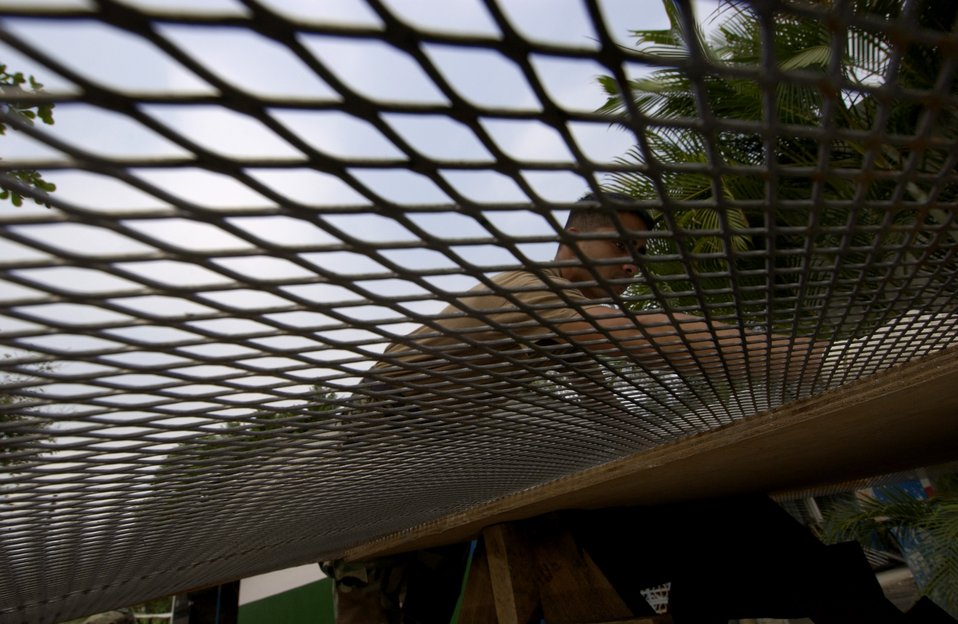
Clean metal

SAN VICENTE, El Salvador -- Airman 1st Class Emmanuel Solois cleans expanded metal at a clinic-building project here April 13. The project is one of the New Horizons exercise projects that will provide two new schools and three clinics in areas that were hit by earthquakes. Airman Solois is assigned to the 28th Civil Engineer Squadron at Ellsworth Air Force Base, S.D.